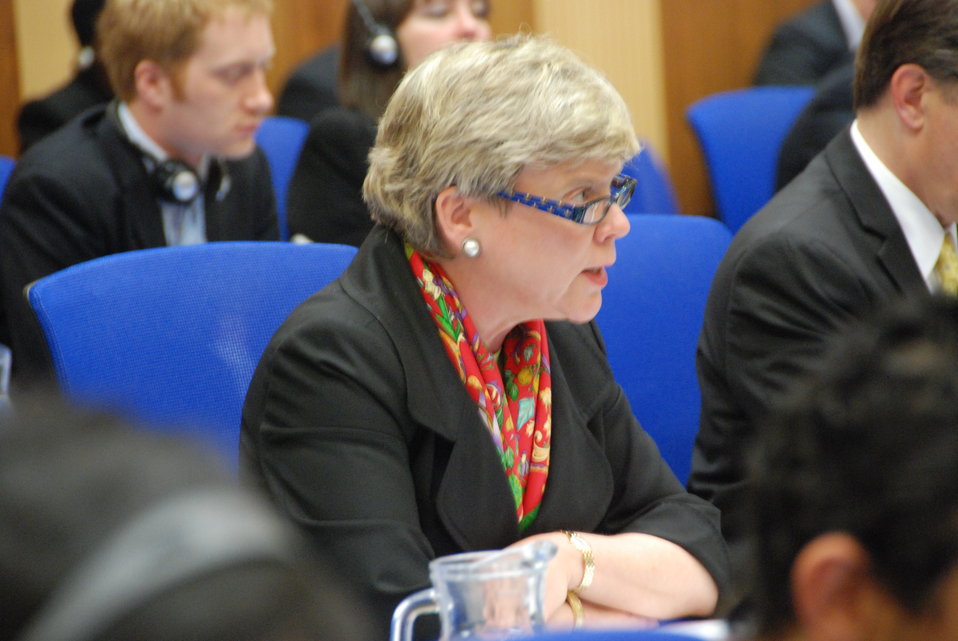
Assistant Secretary Gottemoeller Participates in a Comprehensive Nuclear Test Ban Treaty Organization Meeting

Assistant Secretary for Arms Control, Verification and Compliance Rose Gottemoeller participates in a meeting of the Comprehensive Nuclear Test Ban Treaty Organization in Vienna, Austria, on June 14, 2011.